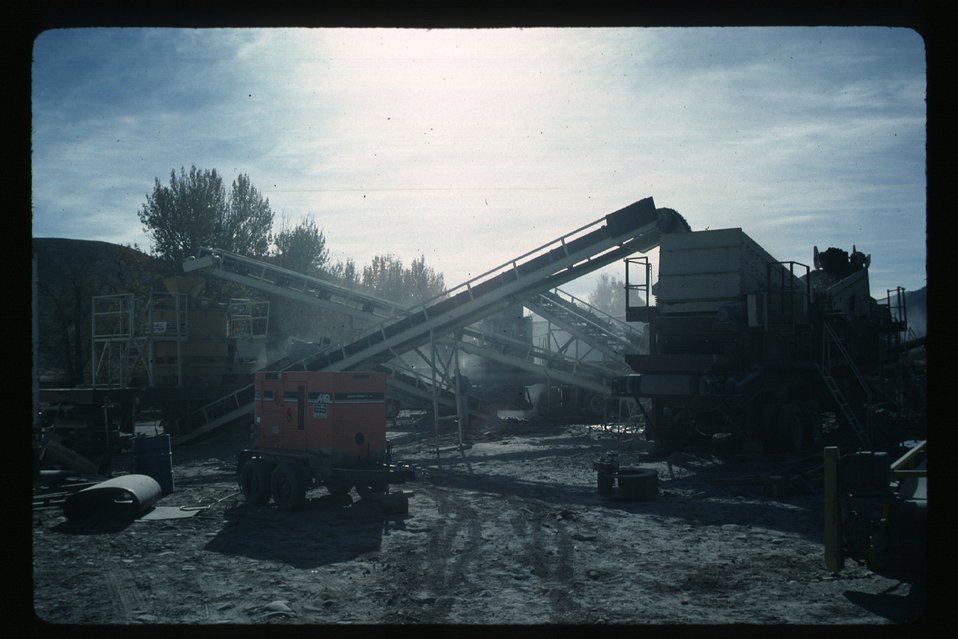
Wood River Rechanneling Recreation and Riparian Shoshone Field Office USRD Upper Snake River District